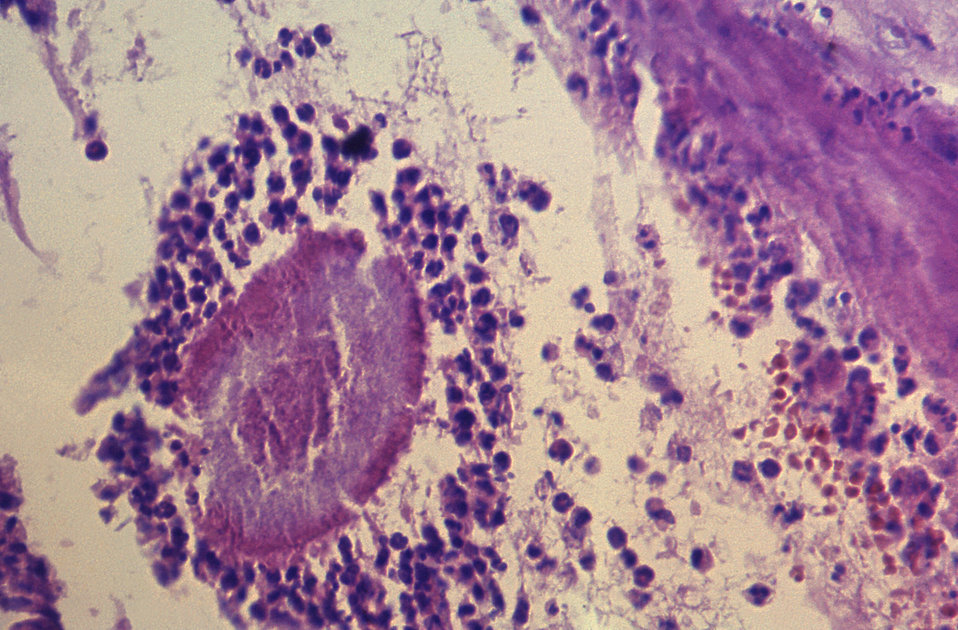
This hematoxylin-eosin (H&E) stained tissue specimen that had been extracted from a patient with an actinomycotic mycetoma, revealed the presence of a sulfur granule. The actinomycosis was caused by the Gram-positive bacterium, Nocardia asteroids.